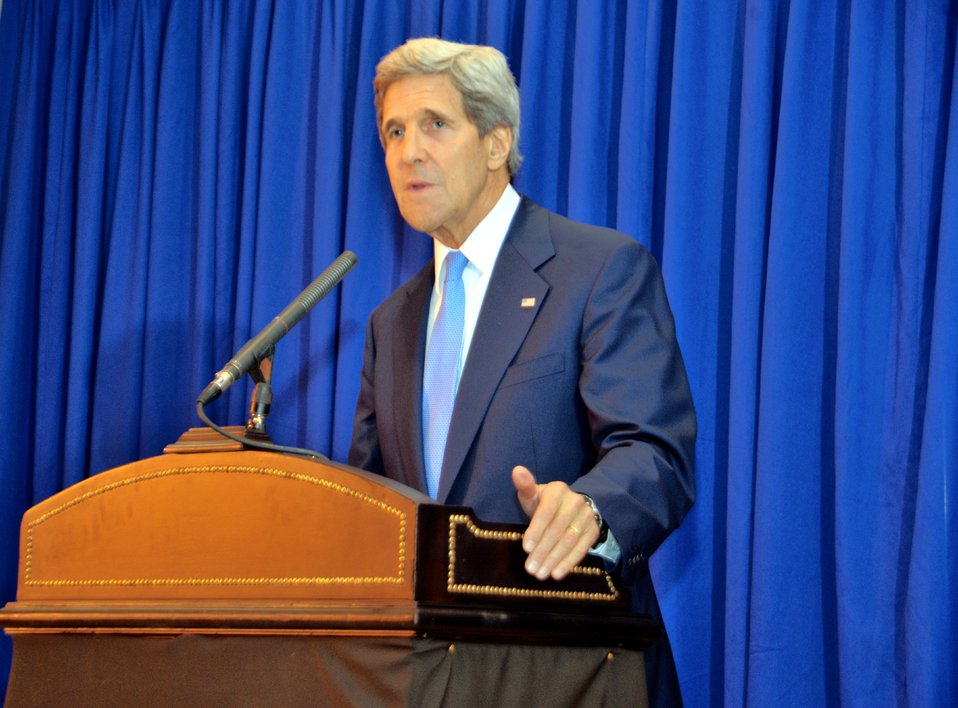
Secretary Kerry Addresses Reporters in Amman, Jordan

U.S. Secretary of State John Kerry holds a news conference in Amman, Jordan, following Middle East peace negotiations on July 19, 2013.